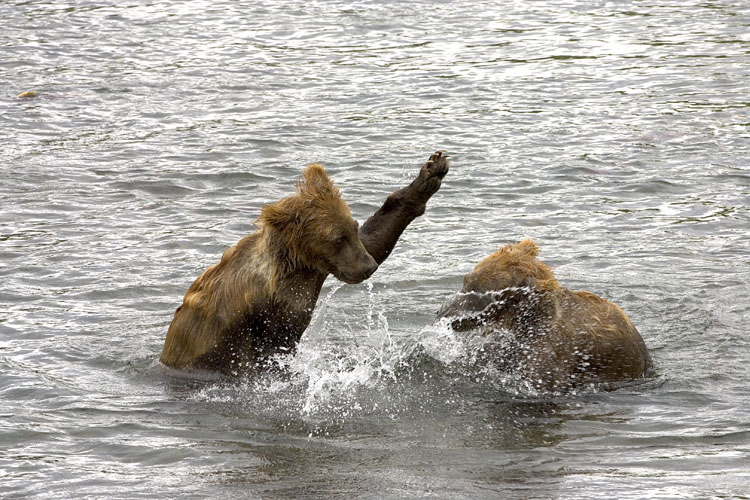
Kodiak Brown Bears

Playful Kodiak Bears